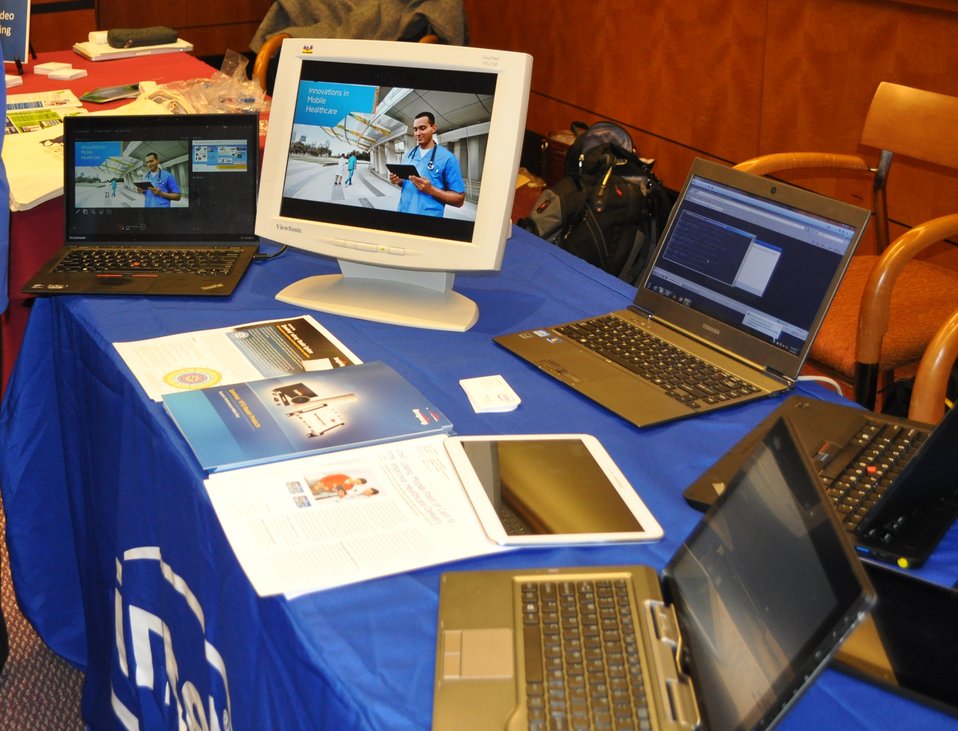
12.6.13 mHealth Innovation Expo

FCC mHealth Innovation Expo.